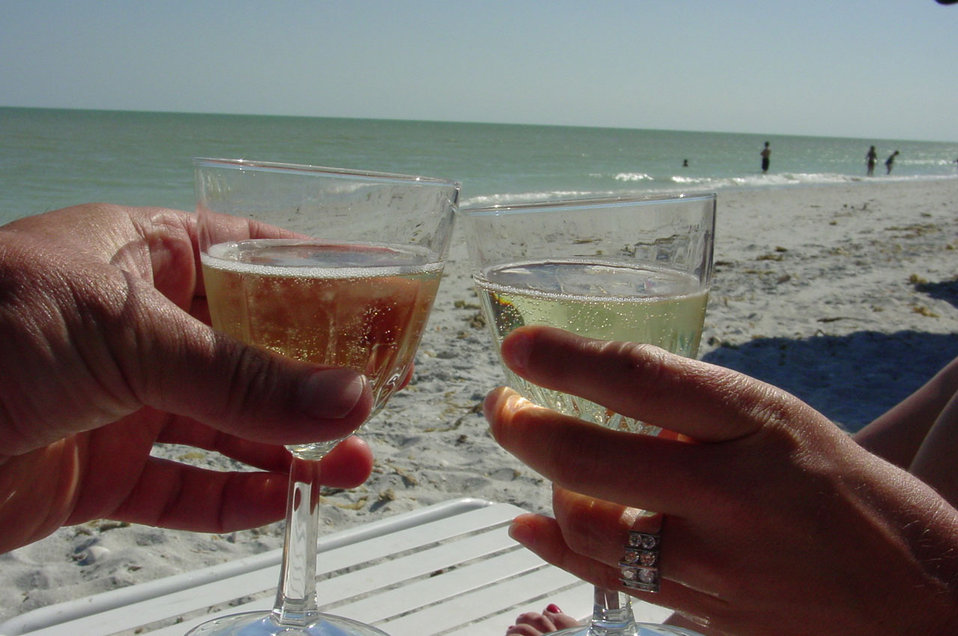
Cheers

Champagne at the beach.